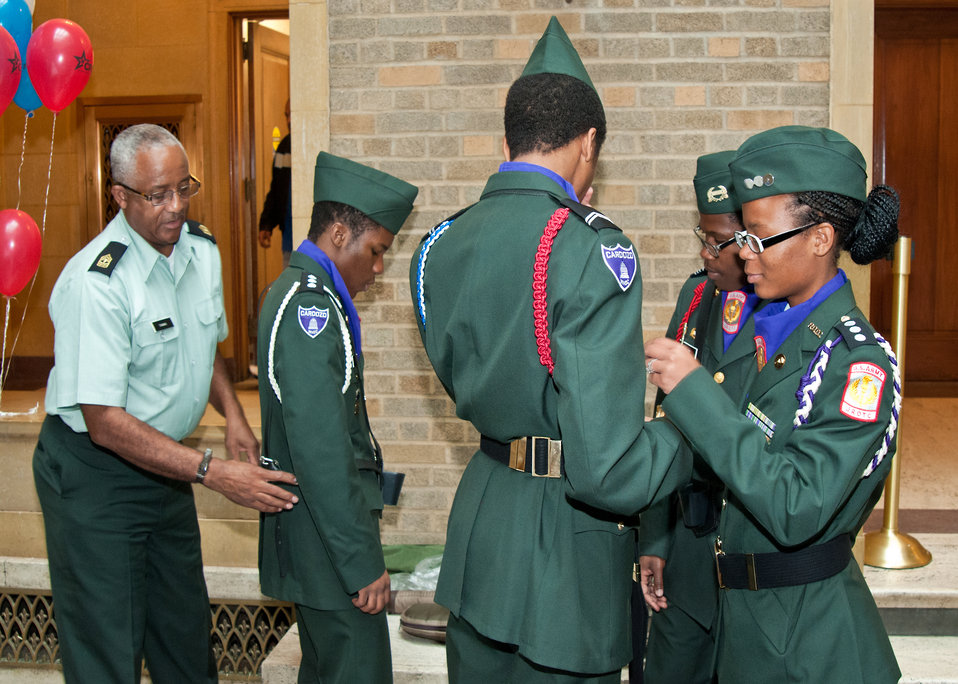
From left: Junior Reserve Officer Training Corps Instructor First Sergeant George Thomas, Calvin Cheeks, Joshua Robinson, Ras-Adriale Bemah and Tyrika Meade, members of the JROTC from Cardozo High School, Washington, DC, prepare to present the colors during the kick-off of the USDA 2011 Combined Federal Campaign “Compassion of Individuals, Power of Community” in Washington, DC, on Wednesday, September 21, 2011. The theme of the 2011 campaign is “Celebrating 50 Years of Caring, Serving and Giving.” The Federal Combined Campaign exhibits represented organizations serving military personnel and their families.